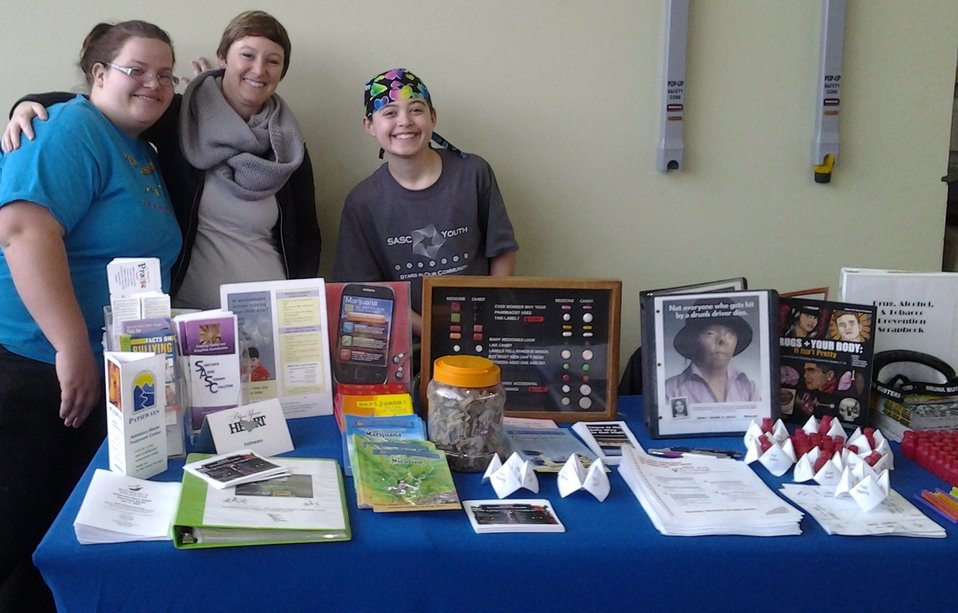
Yuba City's NDFW 2013 Event

Yuba City, CA. Yuba-Sutter Pathways & Substance Abuse Steering Coalition partnered up to offer a booth at the “Bless Your Heart Health Fair “in the Yuba-Sutter Mall.